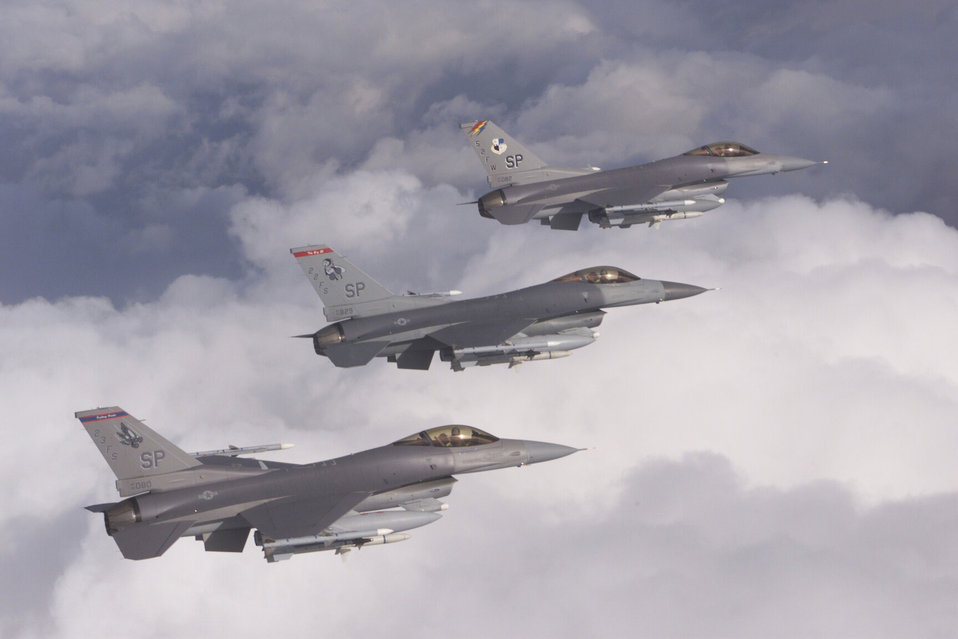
Falcon trio

1990's -- SPANGDAHLEM AIR BASE, Germany -- F-16Cs from the 52nd Fighter Wing, Spangdahlem Air Base, Germany, fly the skies over central Europe. Spangdahlem AB consists of two F-16 squadrons, the 22nd and 23rd Fighter Squadrons. It's also home to the 81st Fighter Squadron, which flies the A-10 Thunderbolt II.